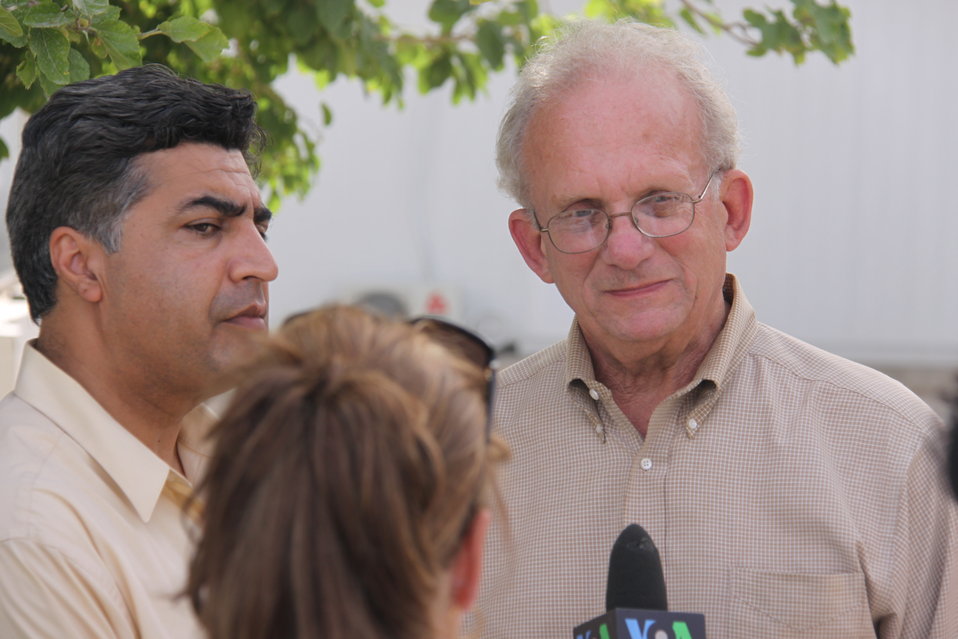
Meeting with Local Leaders in Kandahar